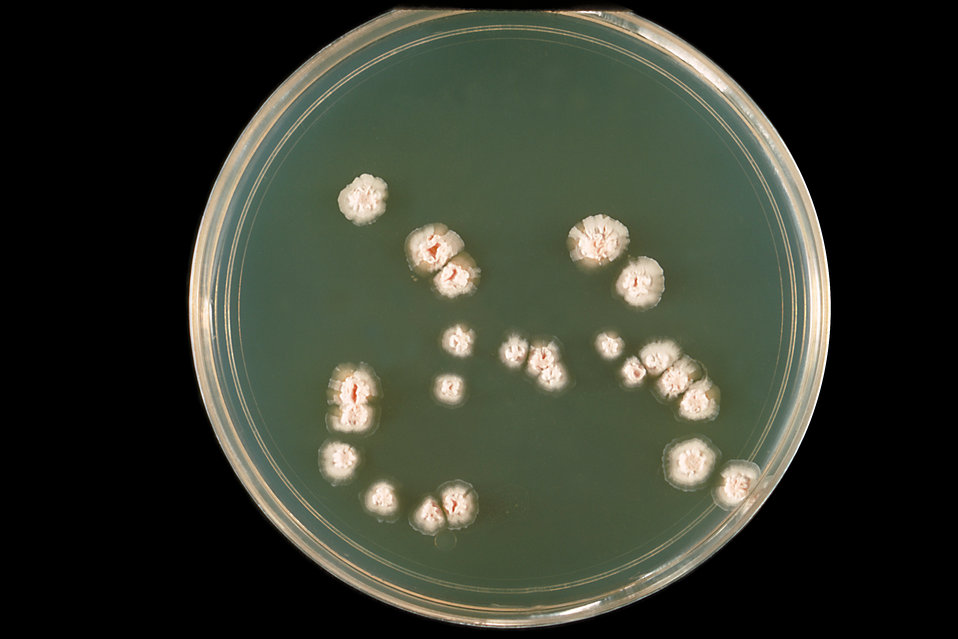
This is a plate culture of Nocardia asteroides, strain 7H10, grown at 37�C.